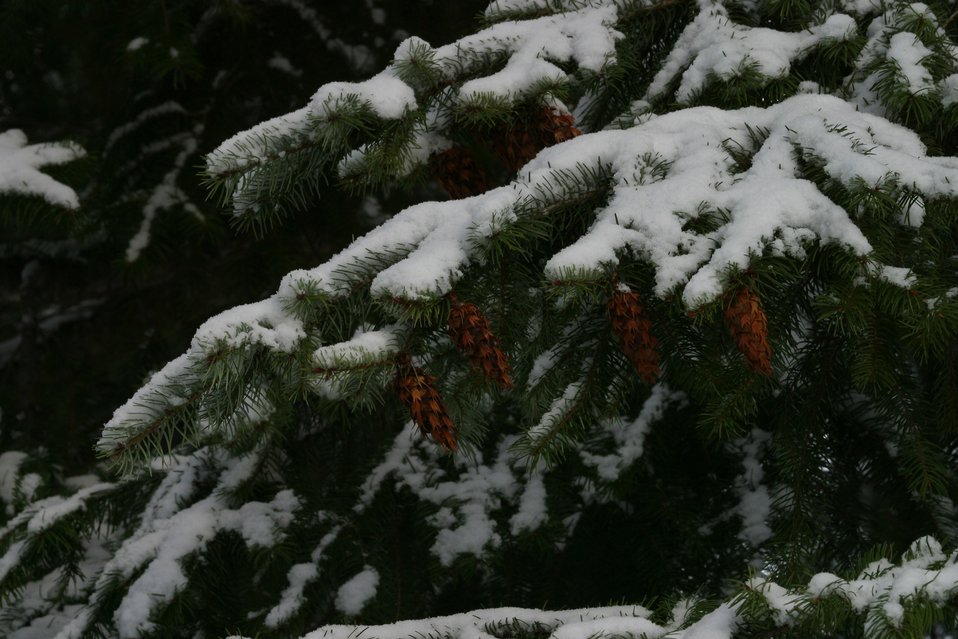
Snow and ice on Douglas Fir Bows and cones during the storm of January 2004.